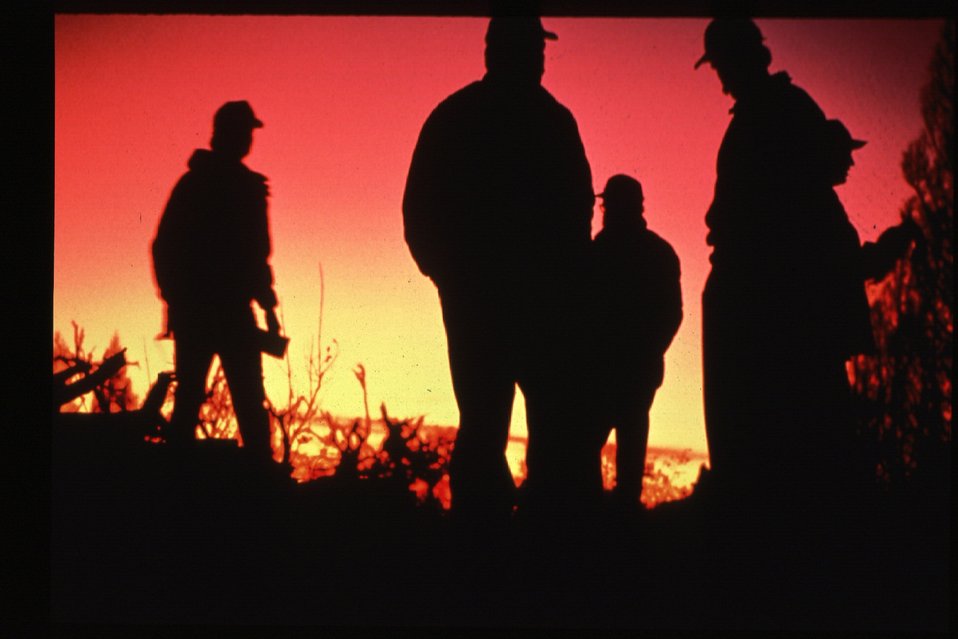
Boise Foothills Fire Danskin Mountains and South Fork of Boise River Wild Fire Fighters Four River Field Office LSRD Lower Snake River District